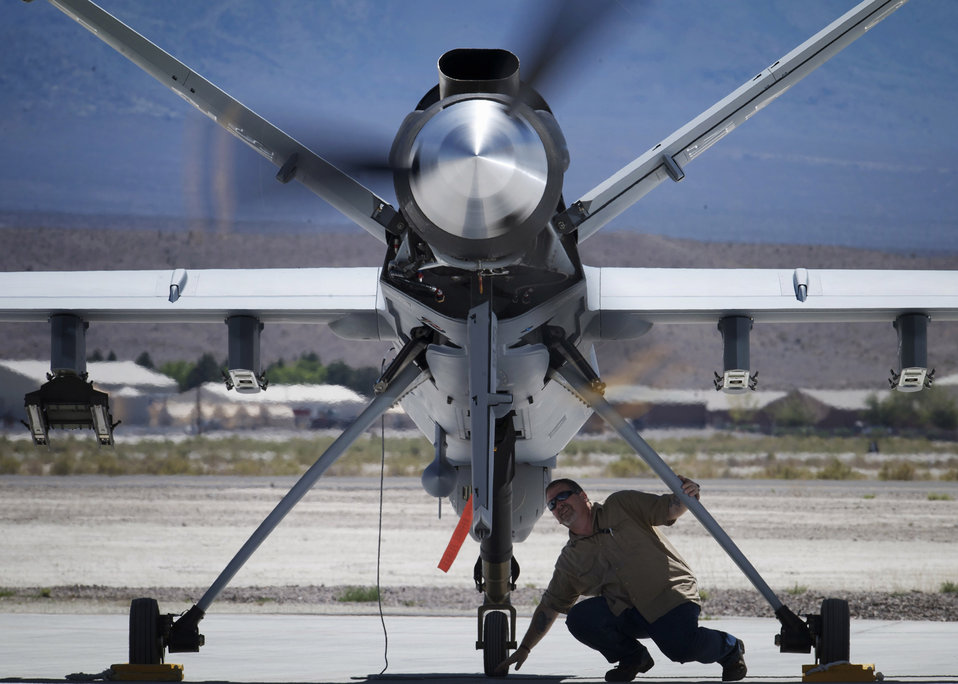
What's going on here?

Marty Anderson checks the turboprop engine of a MQ-9 Reaper June 19 during an operations check at Creech Air Force Base, Nev. Mr. Anderson is an instructor with Air Force Engineering and Technical Services and supports the training of new crew chiefs.